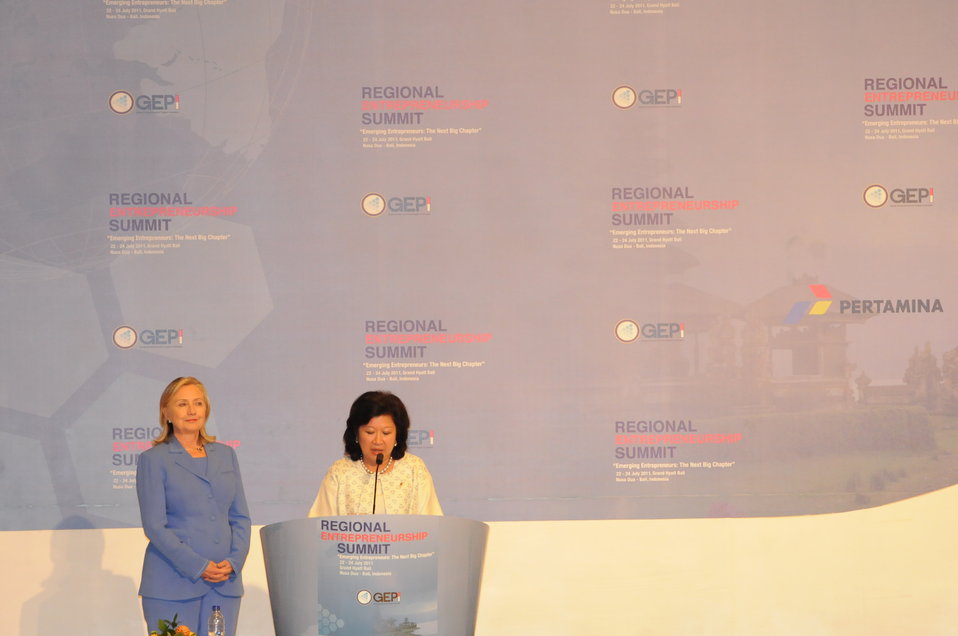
Indonesian Minister of Trade Pangestu Introduces Secretary Clinton To Deliver Remarks

Indonesian Minister of Trade Mari Pangestu, right, introduces U.S. Secretary of State Hillary Rodham Clinton at the Regional Entrepreneurship Summit in Bali, Indonesia, on July 23, 2011.